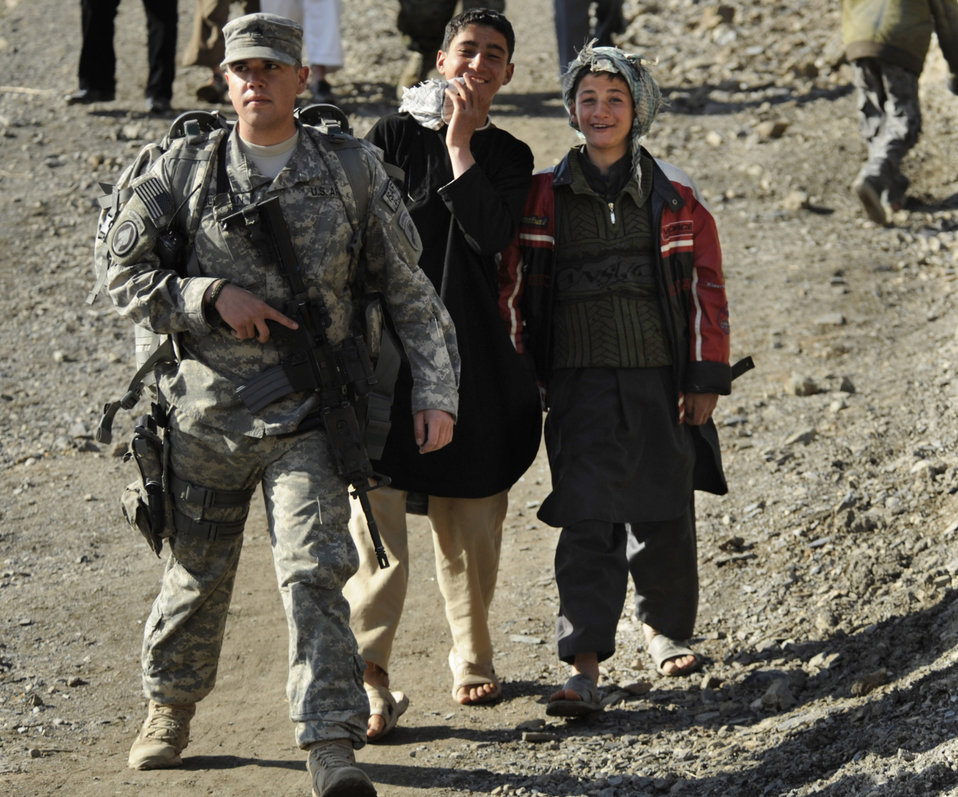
Panjshir Provincial Reconstruction Team

Army Sgt. Ramon Guzman provides security for members of the Panjshir Provincial Reconstruction Team during a March 5 site visit in Afghanistan. Sergeant Guzman is a Panjshir Provincial Reconstruction Team civil affairs member.